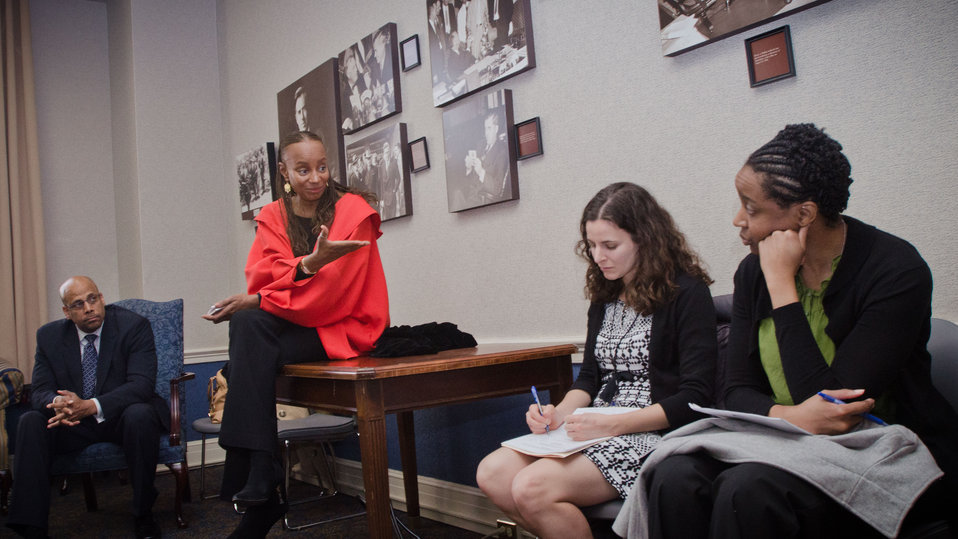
National CARES Mentoring Movement founder and Editor-in-Chief Emeritus, Essence magazine, Susan Taylor (red coat), interacted with White House's Camilla Ihenetu (right) during cross-departmental discussions with Department of Agriculture and Department of Energy personnel in the Whitten Building, U.S. Department of Agriculture, in Washington, D.C., on Tuesday, February 28, 2012. This not-for-profit organization is dedicated to recruiting and connecting mentors with local youth and mentoring organizations to help guide under-resourced children to academic and social success across the country. This discussion provided a continuation of the White House Policy in Action conference that took place in November 2011. The focus of the discussion was about how existing federal programs and administration priorities can be leveraged with her organization, especially as it relates to science, technology, engineering and mathematics (STEM) literacy, education and rural youth.